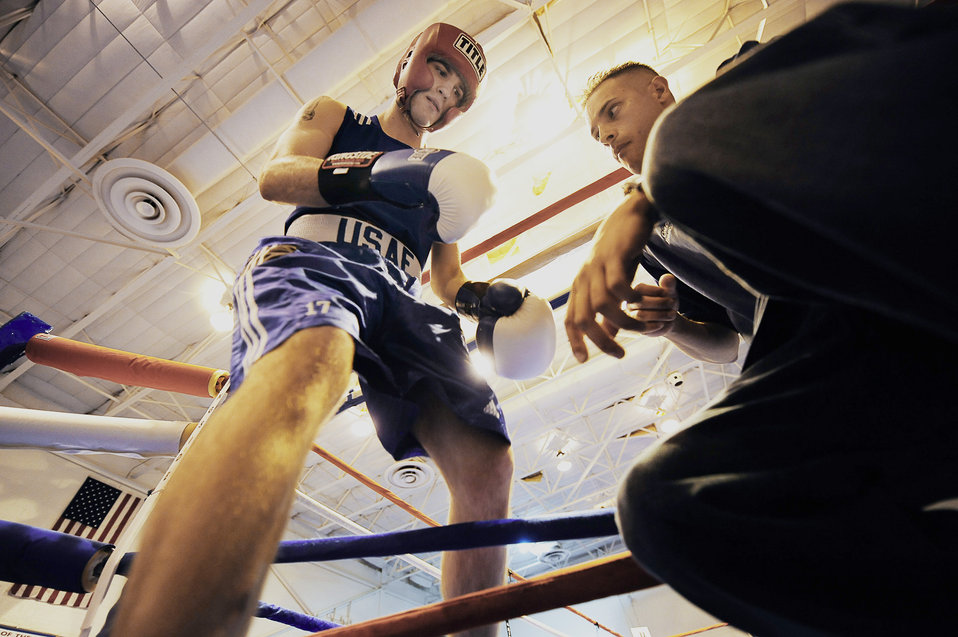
Contenders box for a spot

Coach Steven Franco talks strategy with Senior Airmen Matt MCoy during the Air Force Boxing Championships April 3, 2010 at the Bennett Fitness Center at Lackland Air Force Base, Texas.